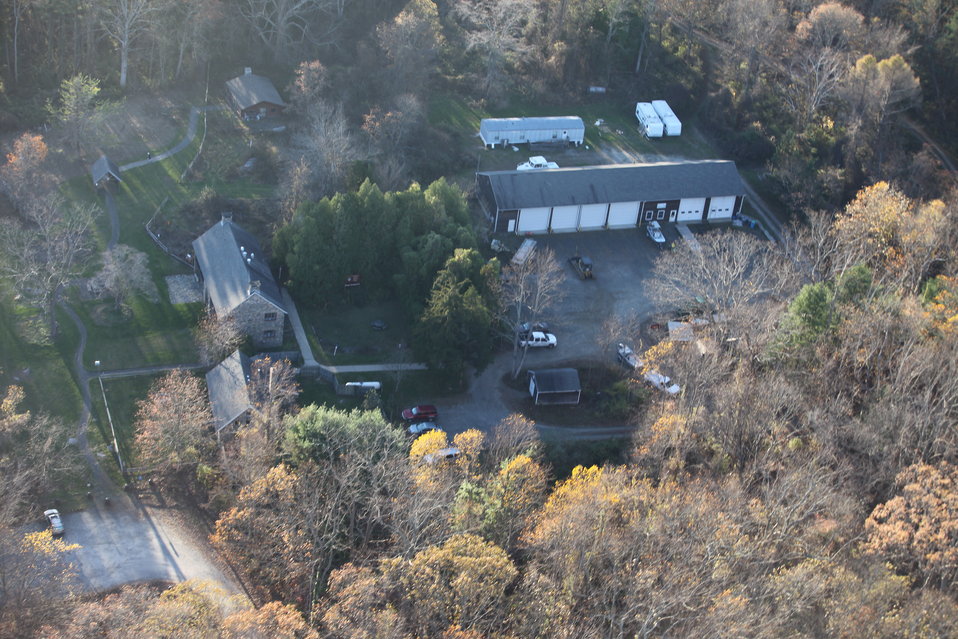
Stewart B. McKinney National Wildlife Refuge Headquarters (CT)

Aerial view of the Stewart B. McKinney National Wildlife Refuge headquarters facility in the aftermath of storm Sandy.